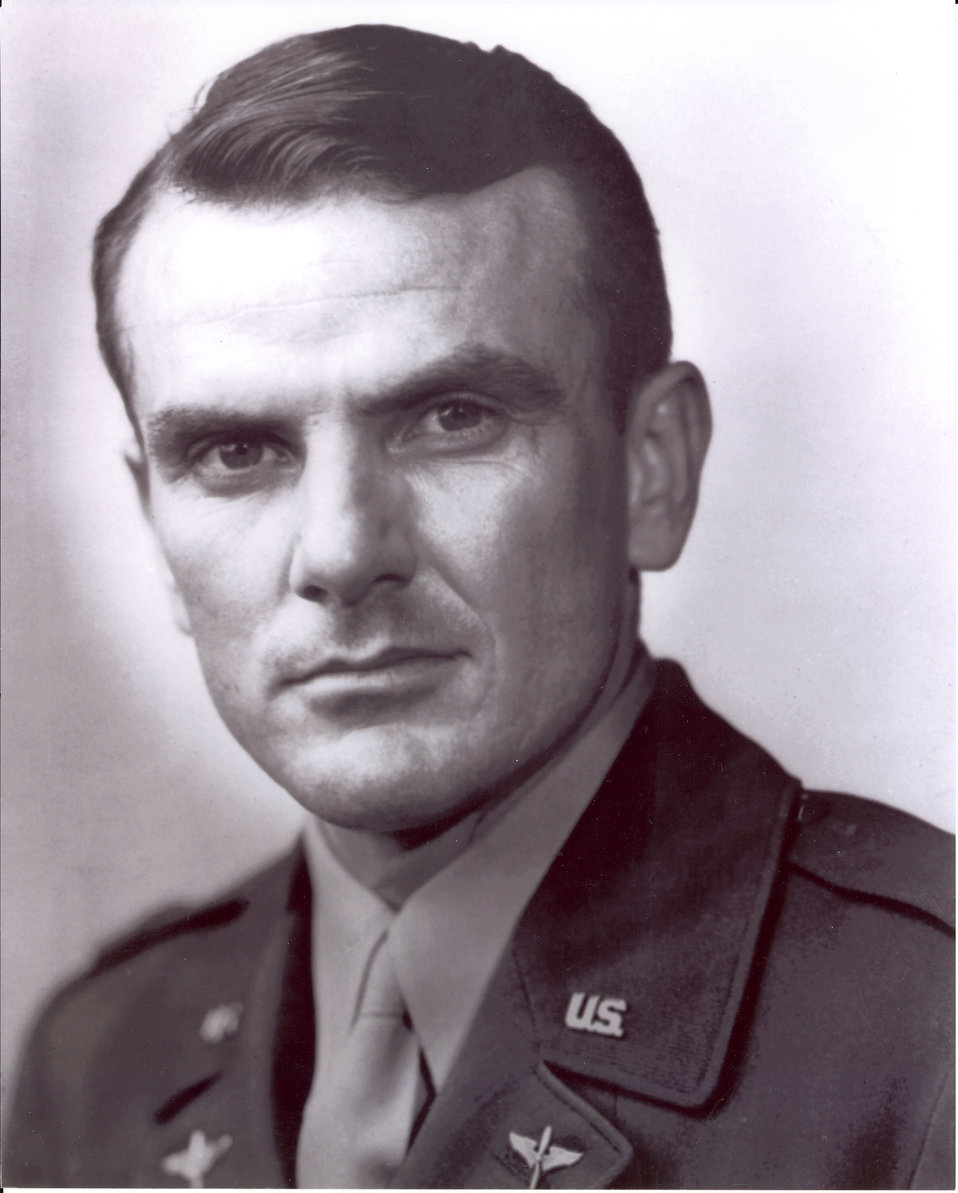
Capt. Glen W. Edwards, an Air Force test pilot, was killed when the YB-49 flying wing prototype bomber broke apart during a test flight. All members of the crew were killed. Muroc Air Force Base was renamed Edwards AFB in his honor on Dec. 8, 1949. A plaque located in front of the Air Force Flight Test Center has a tribute to him.